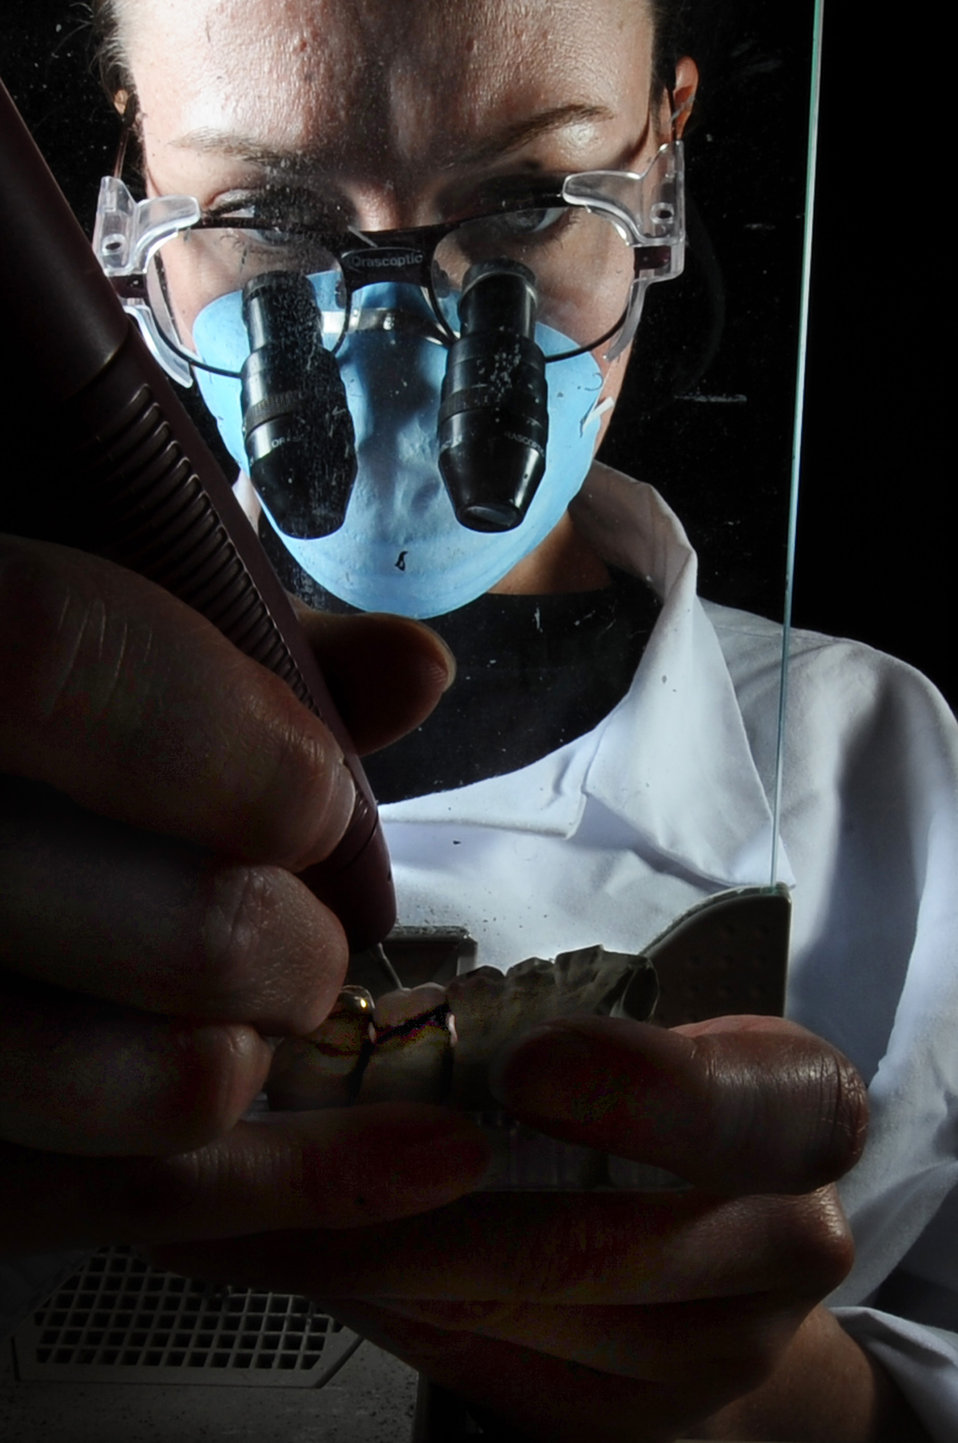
Crown me

Staff Sgt. Amy Cadavero looks through magnifying goggles as she shapes a porcelain crown using a dental drill with a diamond bur drill bit Sept. 9 at Eielson Air Force Base, Alaska. Once Sergeant Cadavero receives the impressions made from a patient's teeth, she will then make it into a cast mold to start shaping the crown so it will fit comfortably in a patient's mouth. This process can take up to a week to finish. She is a dental lab technician assigned to the 354th Medical Operations Squadron